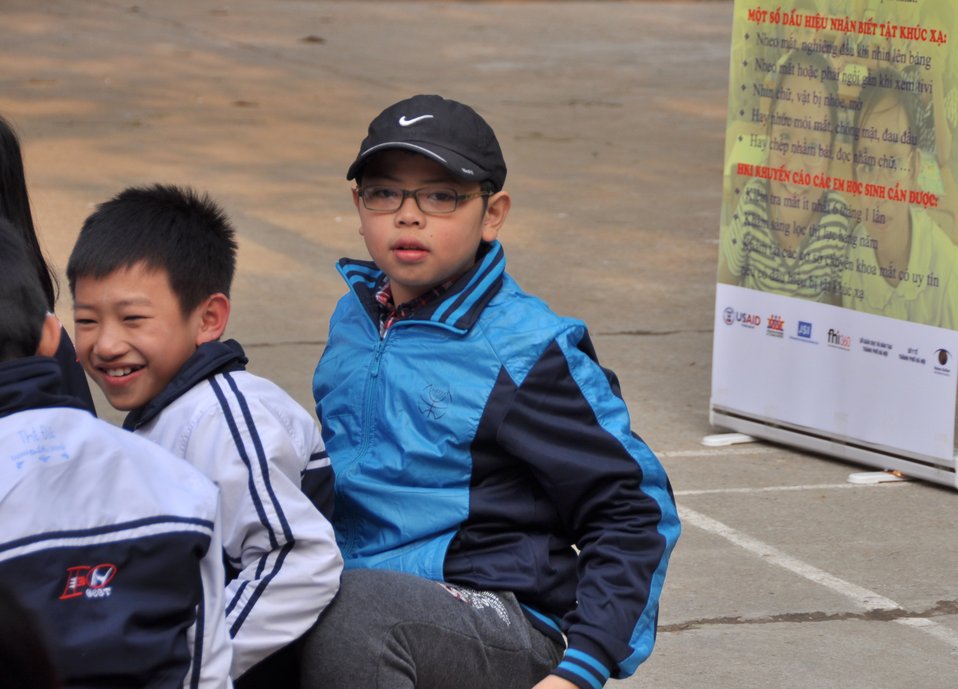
USAID supports distribution of eyeglasses to pupils and teachers in Quoc Oai, Hanoi.

Kieu Phu Junior Secondary School, Quoc Hoai, Hanoi, December 23, 2013.